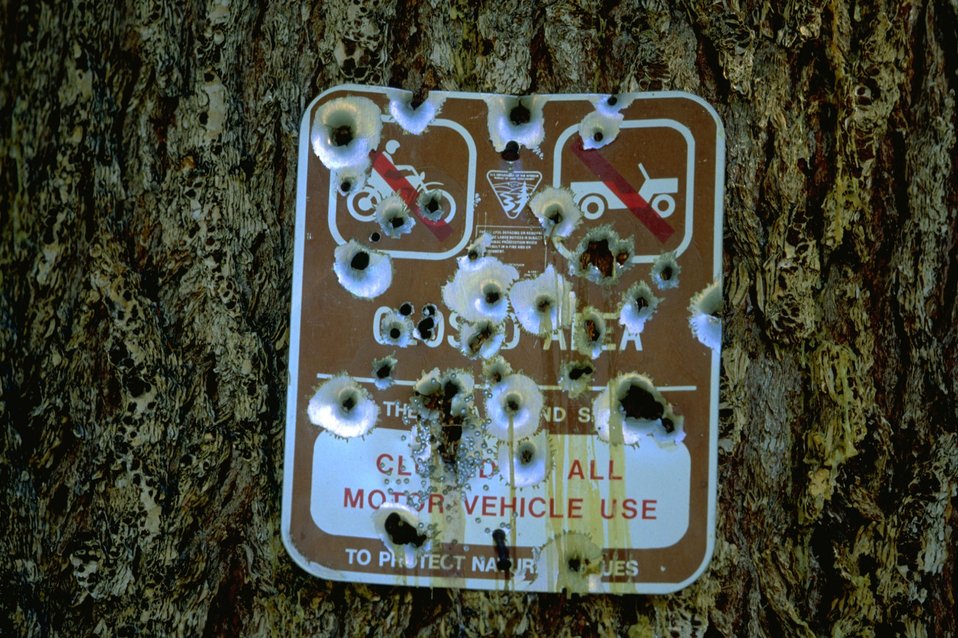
Regulation Sign destroyed by bullet holes